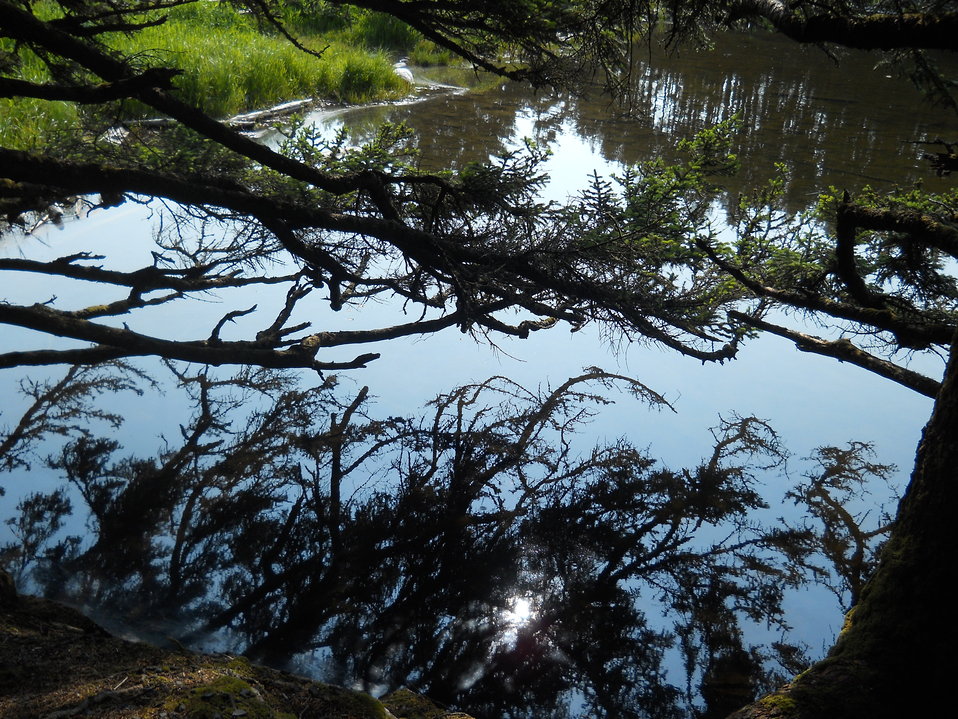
Branched Reflections

Credit: USFWS
Photo taken by a Salmon Camp participant during a nature photography activity.

Source and Contact: Kodiak National Wildlife Refuge